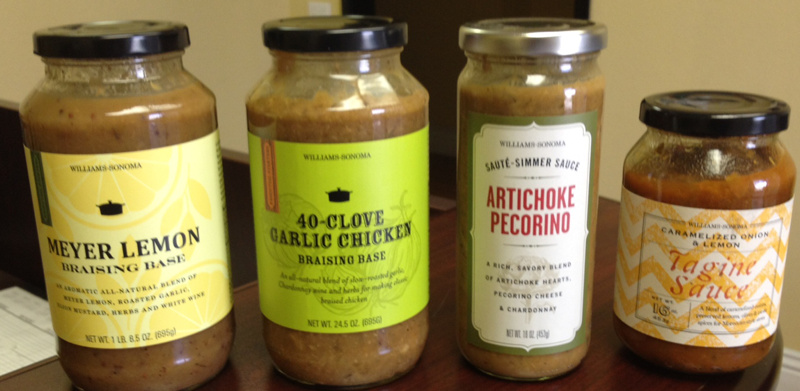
williams-sonoma-sauce-jars

August 28, 2013 – Premier Foods, LLC Announces The Recall Of Products Sold At Williams-Sonoma For Undeclared Allergens.